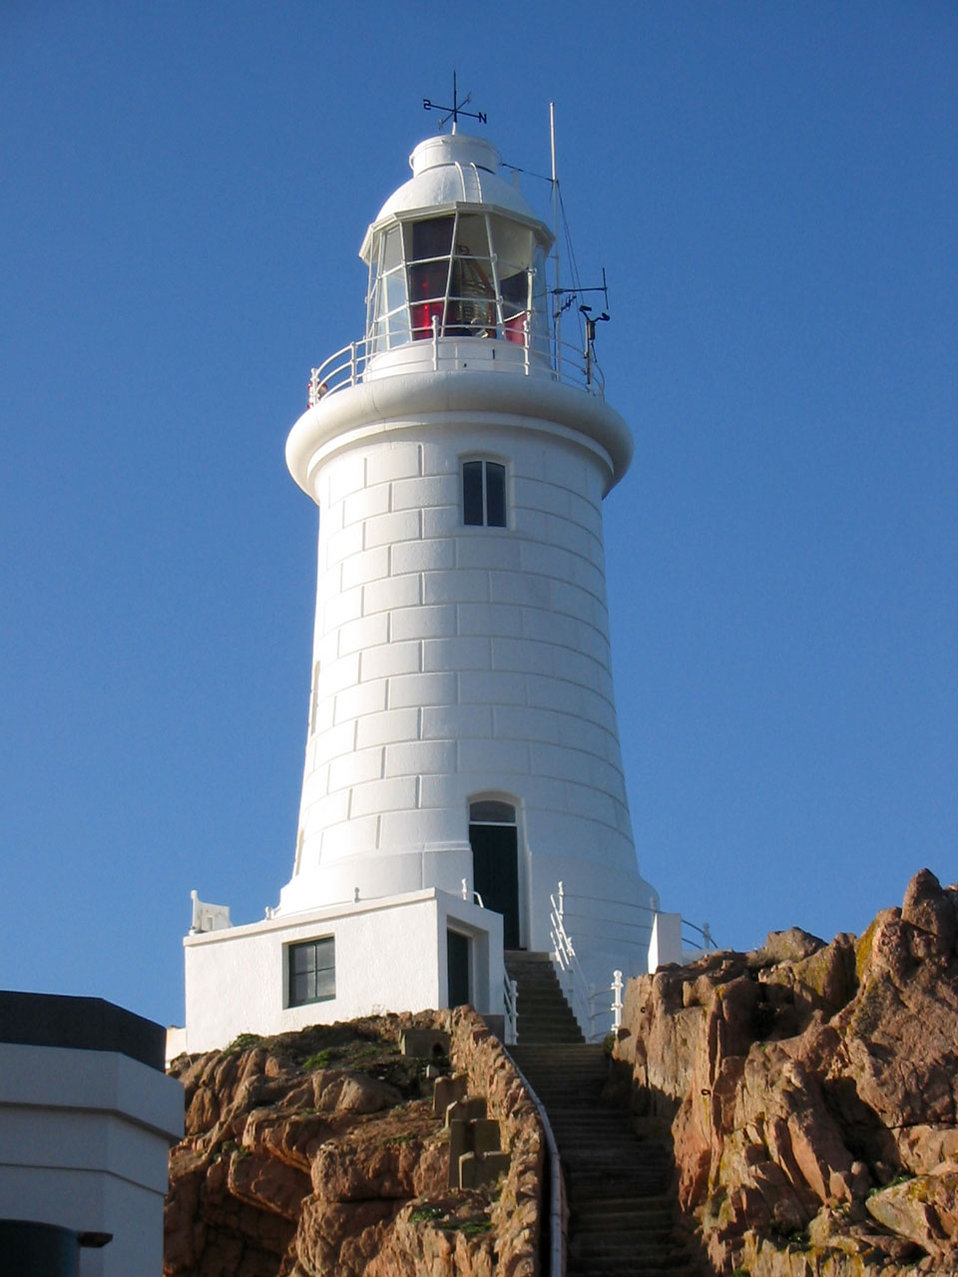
La corbiere lighthouse on south-western point of jersey in st. brelade..